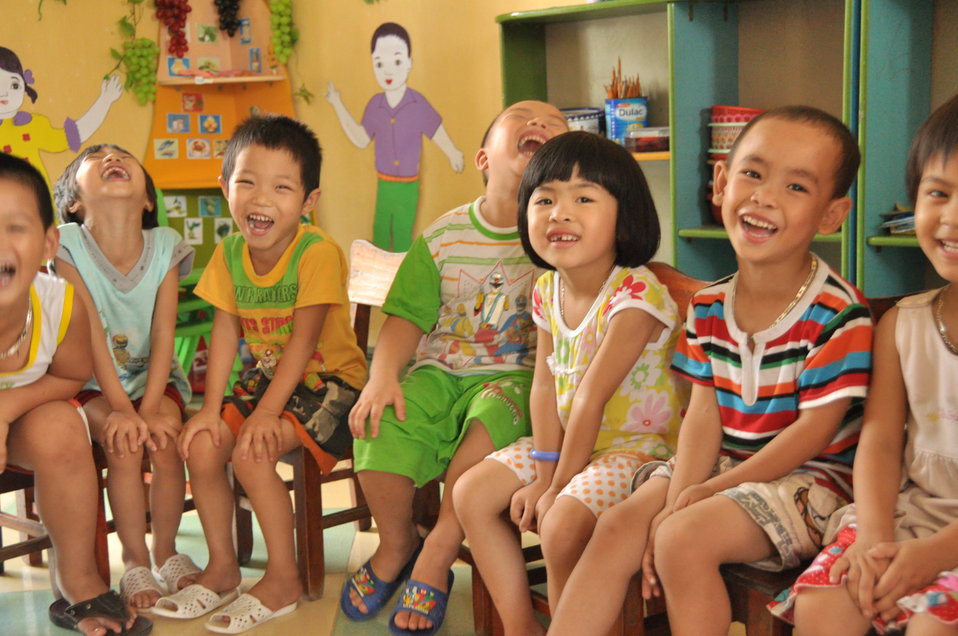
USAID Delivers Deworming Medication to Kindergartners in Nam Dinh Province

Children of Vietnam's Nam Dinh Province receive deworming medicine in a program supported by USAID and World Vision Australia.
June 1, 2013